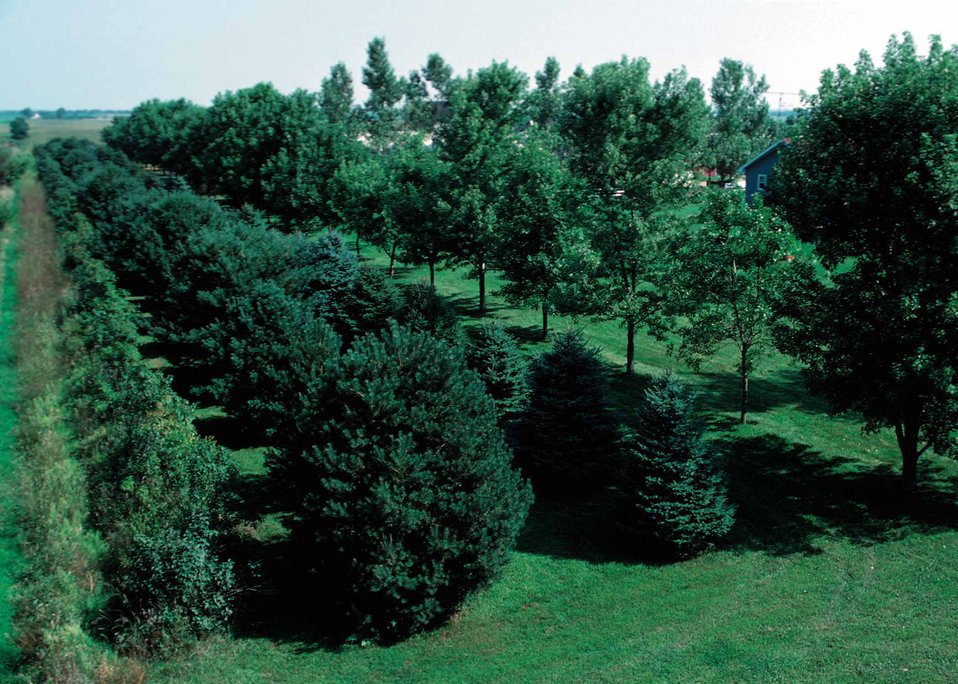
Multi-row farmstead windbreak in Pocahontas County, Iowa, includes shrubs, conifers, and deciduous trees.